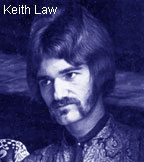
Keith Law in 1969